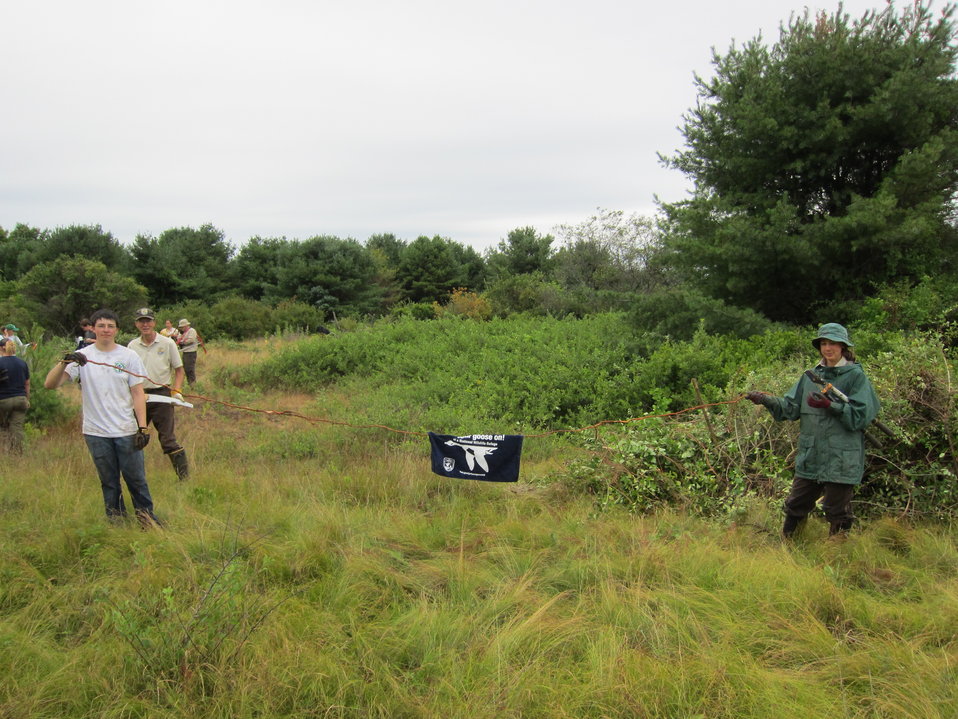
Get Your Goose On!

Josh, winner of longest root pulled, displaying his trophy along side the towel